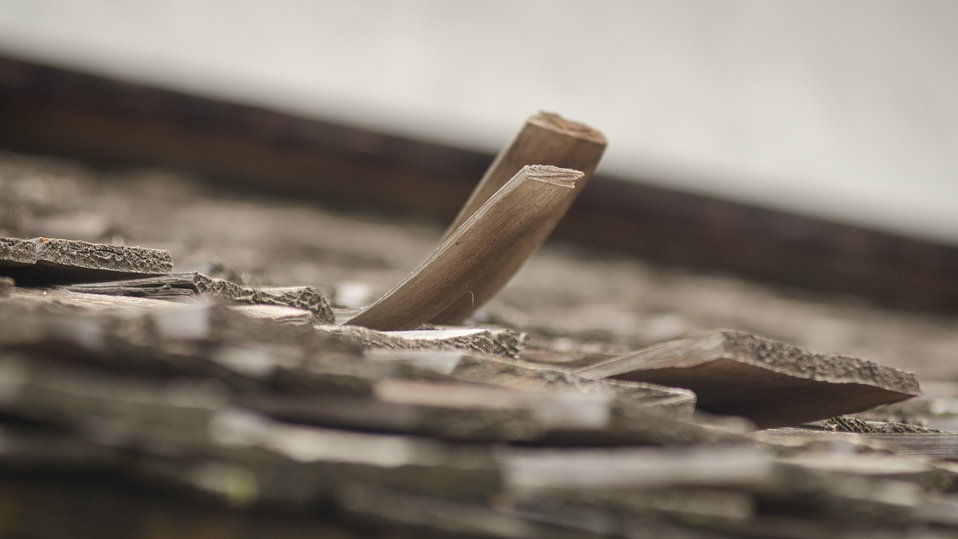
Homes with real wood shake shingles so dry and weathered they curls up, are a great concern to firefighters trying to protect them from the Beaver Creek Fire, nears Hailey, ID, in the U.S. Department of Agriculture (USDA) Forest Service (FS) and Sawtooth National Forest and Bureau of Land Management (BLM) on Wednesday, Aug 21, 2013.